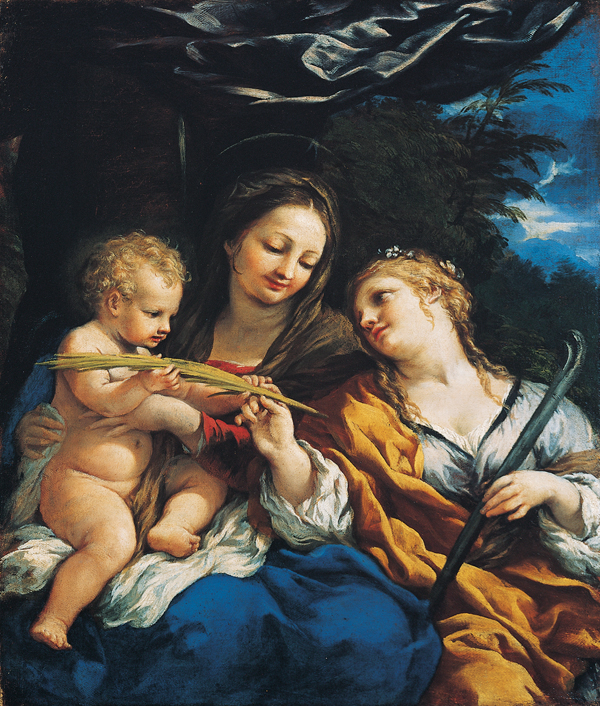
'The Madonna and Child with Saint Martina', oil on canvas painting by Pietro da Cortona